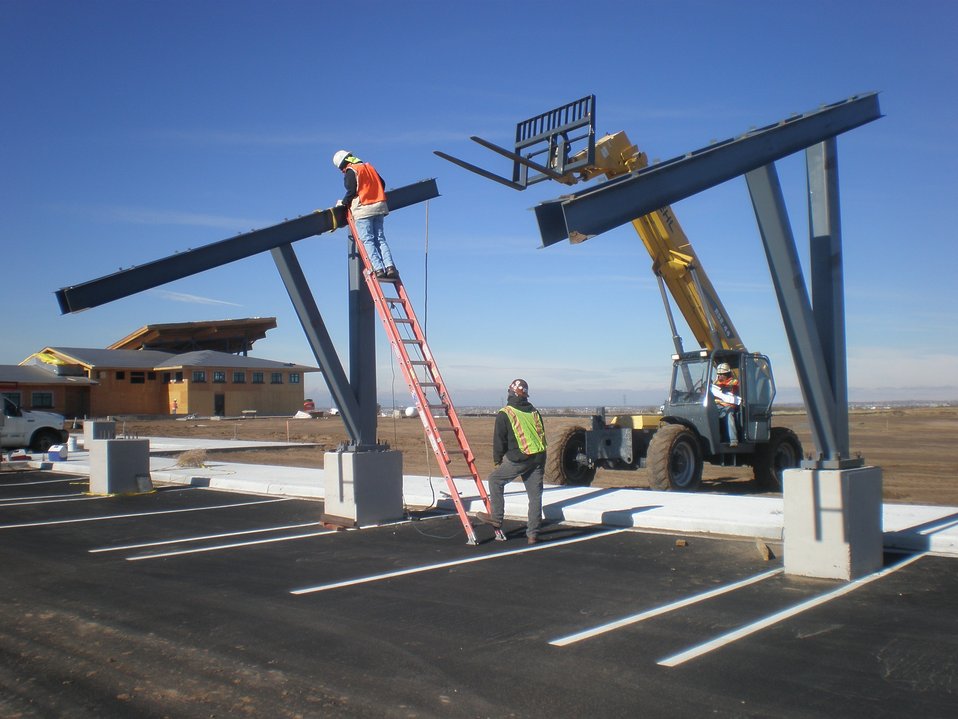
Installing Photovoltaic Panels at Rocky Mountain Arsenal National Wildlife Refuge

Construction crew installs photovoltaic panels at the Rocky Mountain Arsenal National Wildlife Refuge in Colorado. These large, outdoor solar panels provide energy, and serve as protective covering for cars in the parking lot next to the Visitor Center.